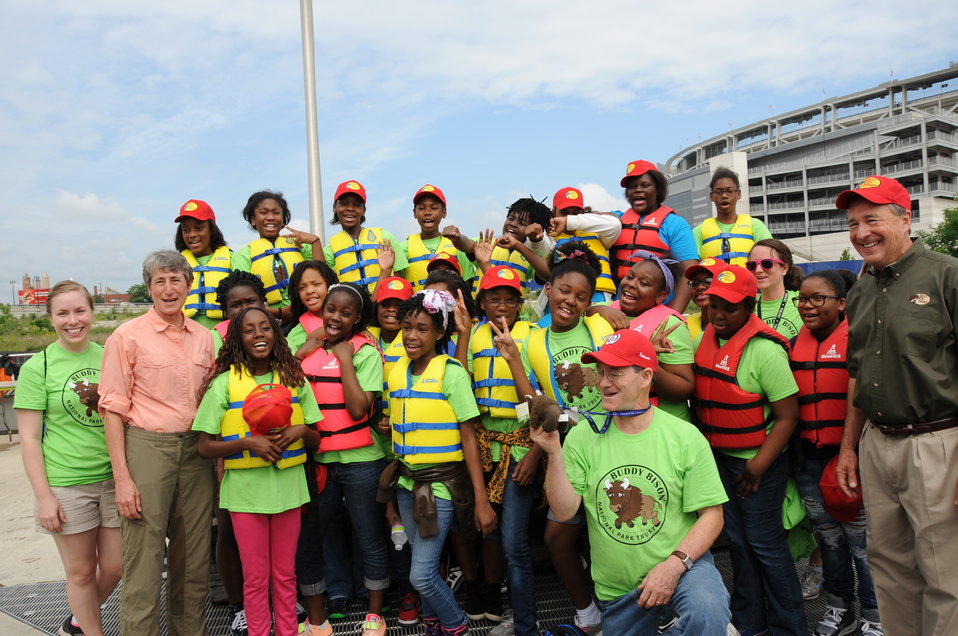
2013 National Fishing and Boating Week

Local students prepare to enjoy fishing at the annual kick-off of National Fishing and Boating Week on the Anacostia River in Washington D.C.